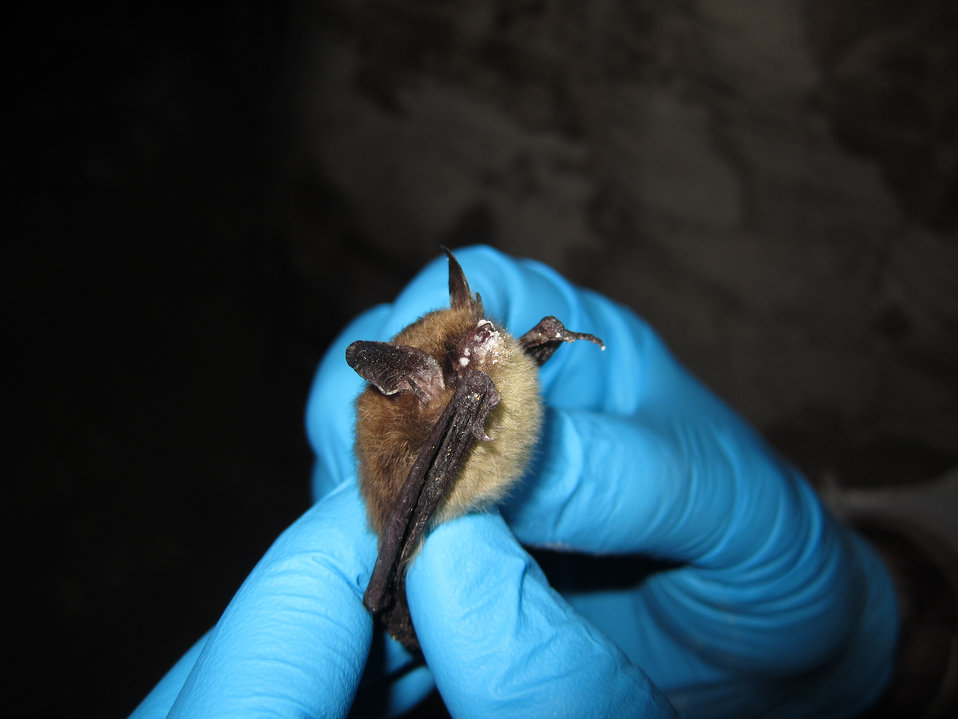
Northern long-eared bat with visible symptoms of WNS

Myotis septentrionalis, northern myotis (Vespertilionidae) with growth of Geomyces destructans clearly evident. LaSalle County, Illinois. January 2013